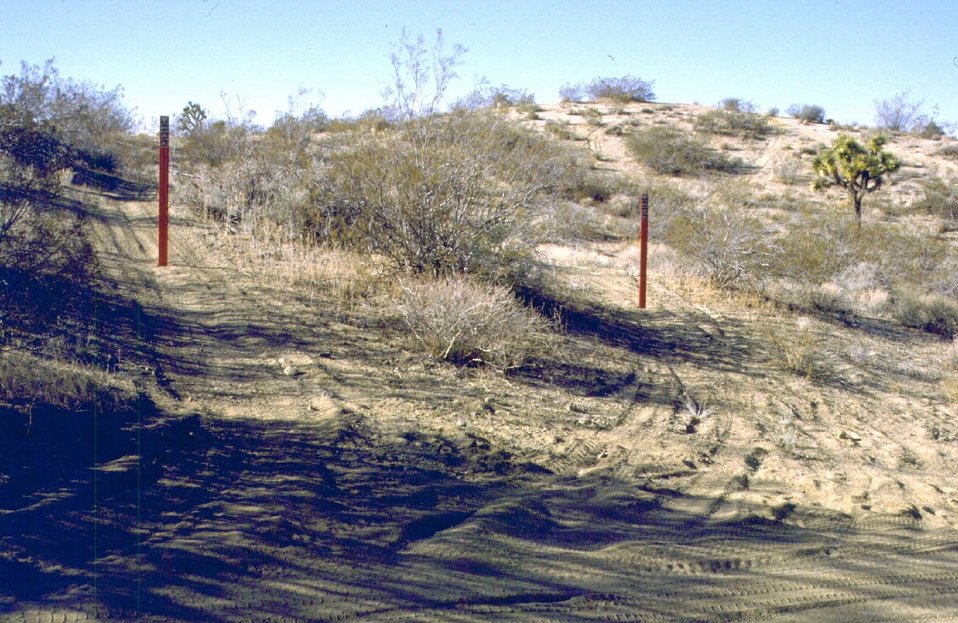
Goes with Actxg; continuing trespass across designated route to other side of the route.